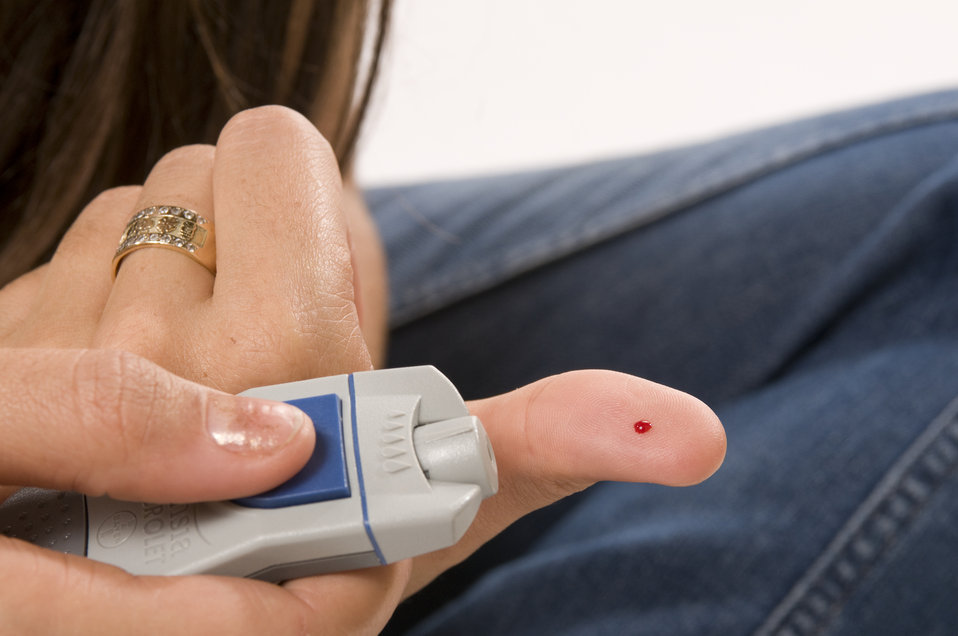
This image reveals a blood droplet atop the left thumb of a young girl who was in the process of performing a self-monitoring blood glucose test, which as a diabetic, would test her blood glucose level. She was holding the monitoring device in her right hand.